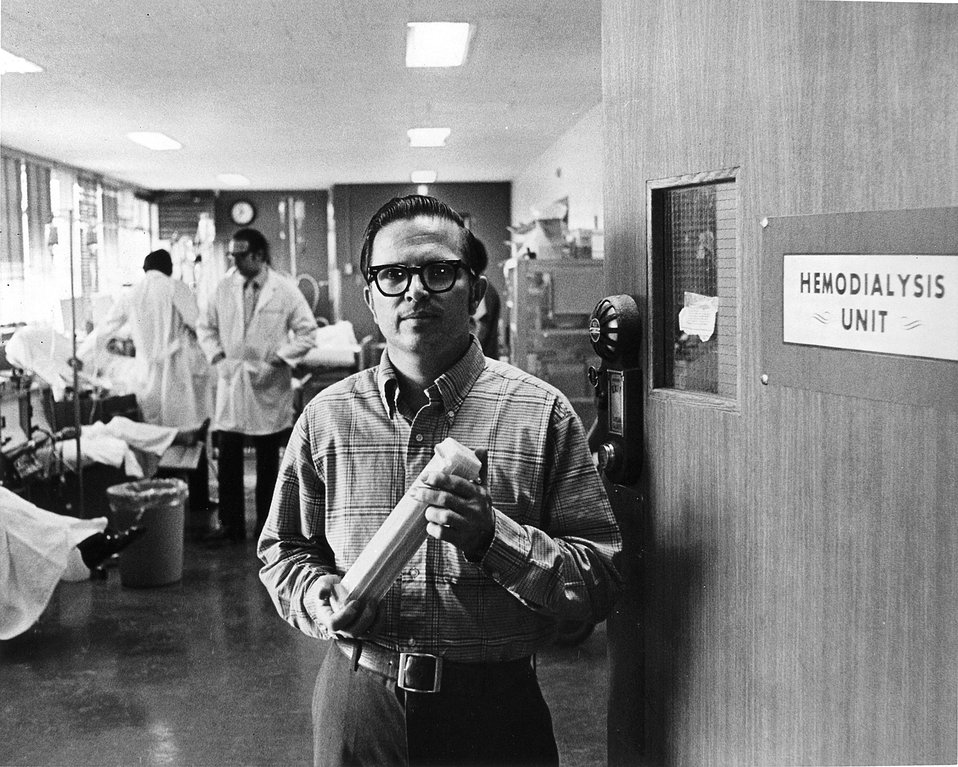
Finley Markley, LA, holds the artificial kidney he helped develop as an employee of the AEC Argonne.
c.1973